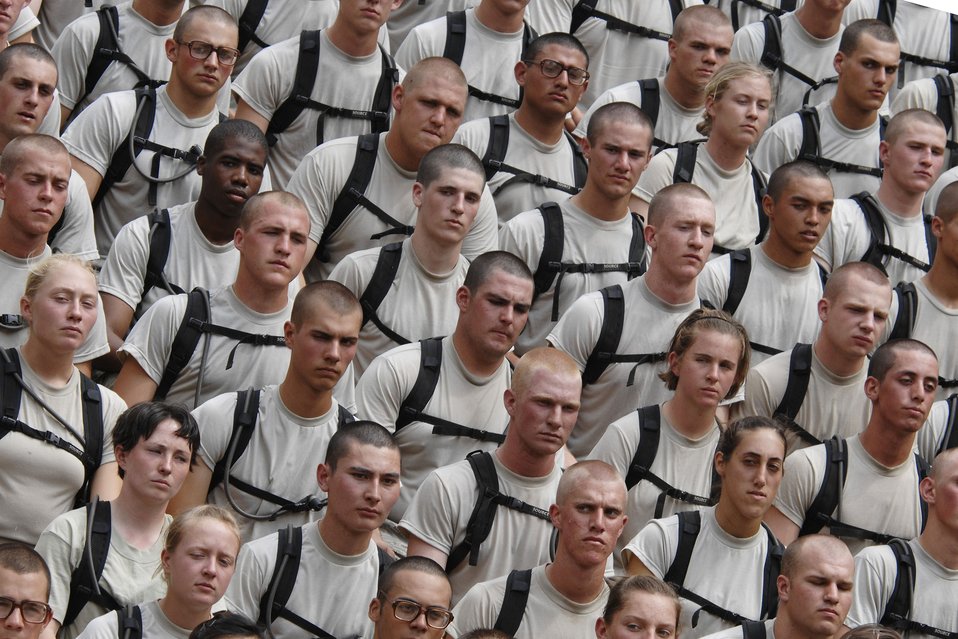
Poised for reaction

U.S. Air Force Academy basic cadets receive instruction before the start of the leadership reaction course July 17 in the Jacks Valley training area near Colorado Springs, Colo.